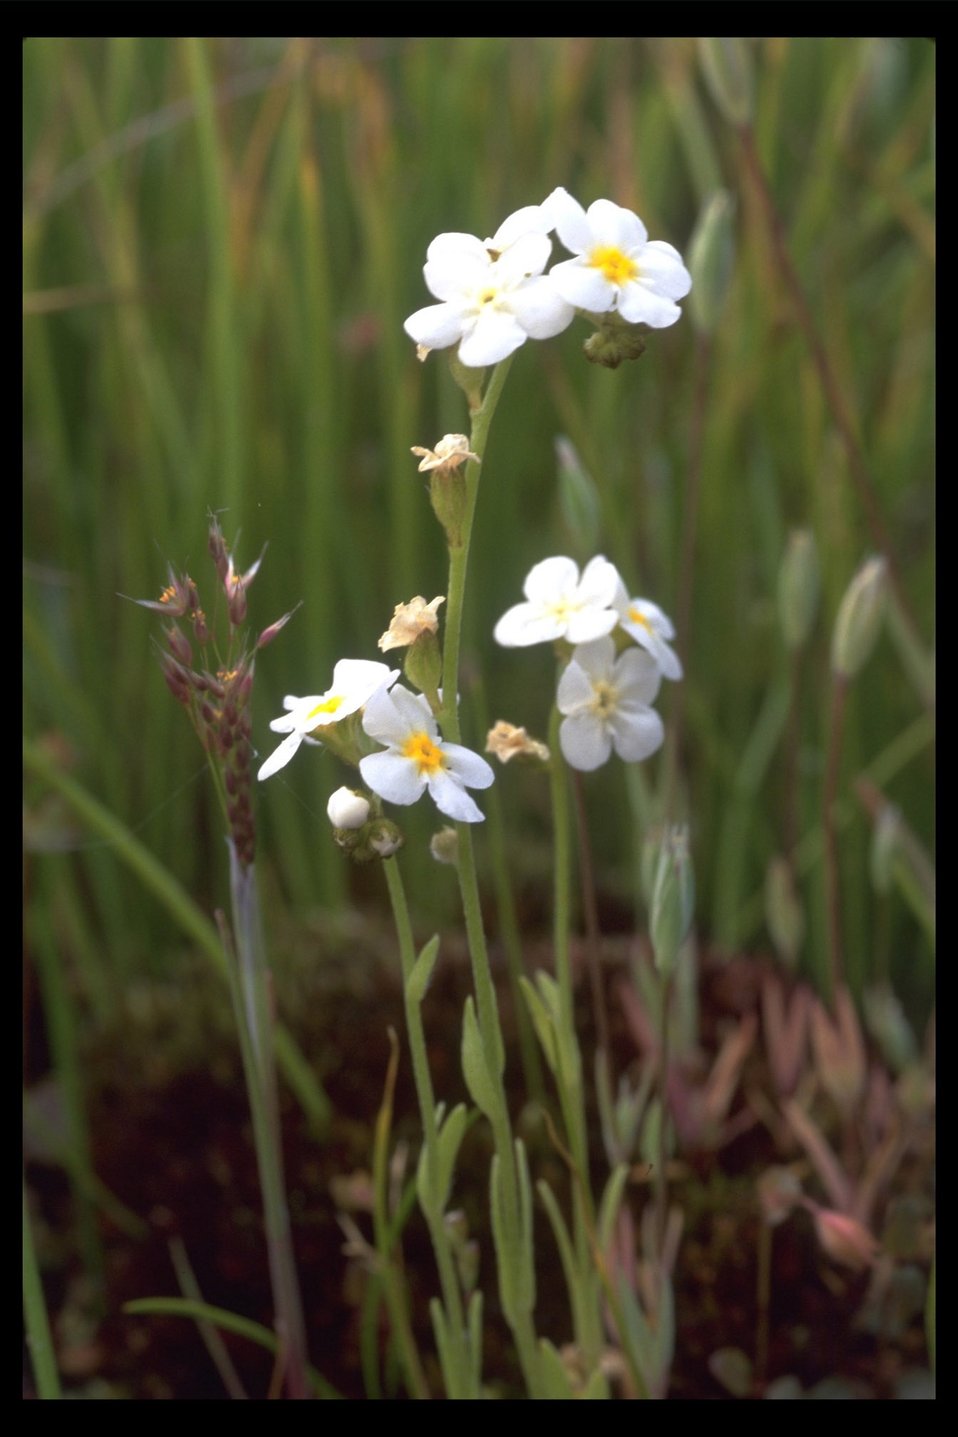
Fragrant Popcorn Flower (Plagiobothrys figuratus) located west of Meadows Road, near Beagle Road.